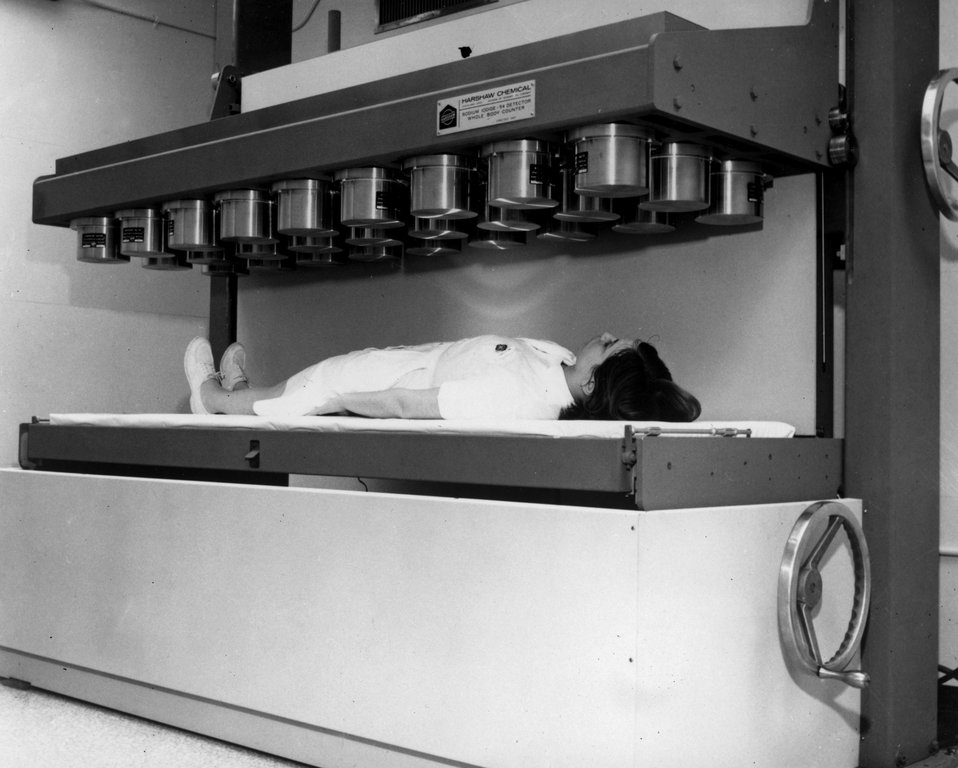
Low Level Whole Body Counting Facility, a nurse simulates a patient in the multi-crystal whole body counting and gamma ray scanning spectrometer system.
c.1968